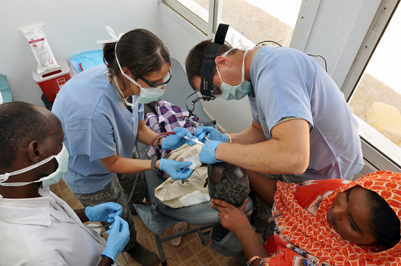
MEDCAP

Staff Sergeant Leah Potter and Captain Robert Spriggel treat a dental patient May 5, 2011, during a Medical Capacity Program mission in Obock, Djibouti. Dentists attached to Combined Joint Task Force -- Horn of Africa cared for Obock citizens with periodontal diseases. The MEDCAP also featured optometric and preventative care performed by 20 service members attached to CJTF-HOA.